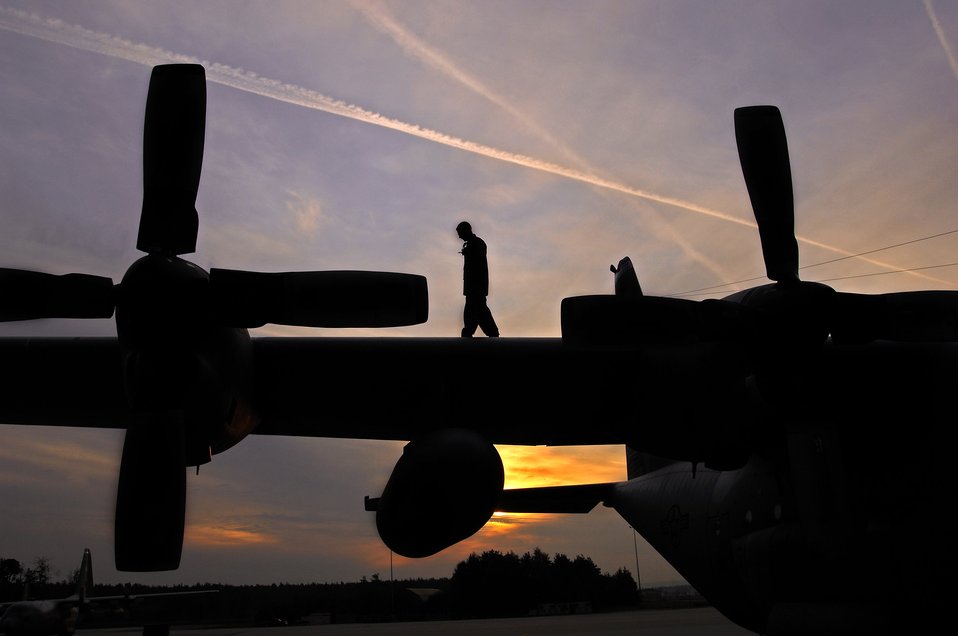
Rider in the sky

Airman 1st Class Phillip Bean performs a pre-flight inspection on a C-130 Hercules Sept. 18 at Ramstein Air Base, Germany.